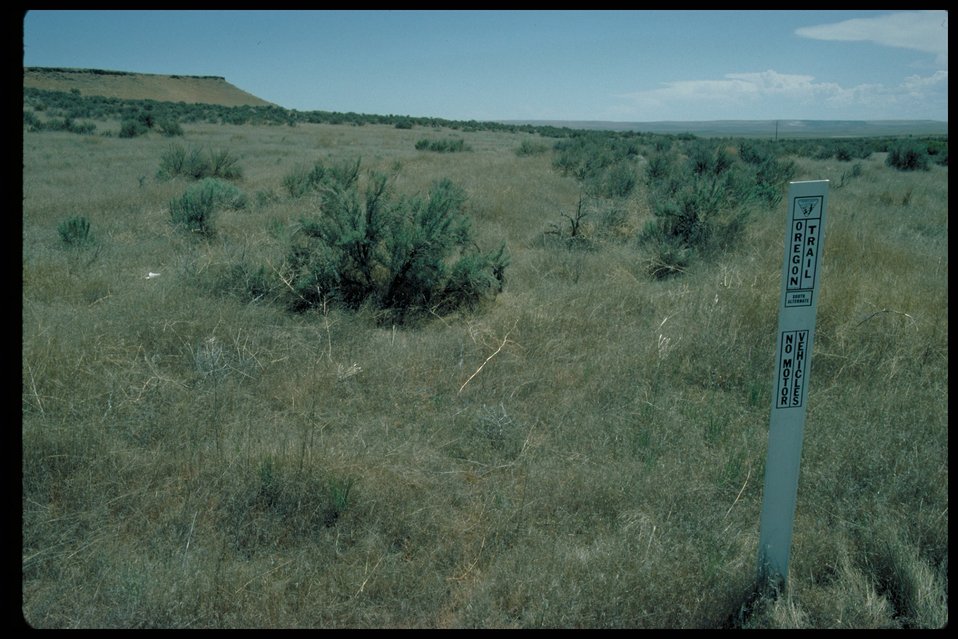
Oregon Trail NE of Bruneau Sand Dunes Lower Snake River District